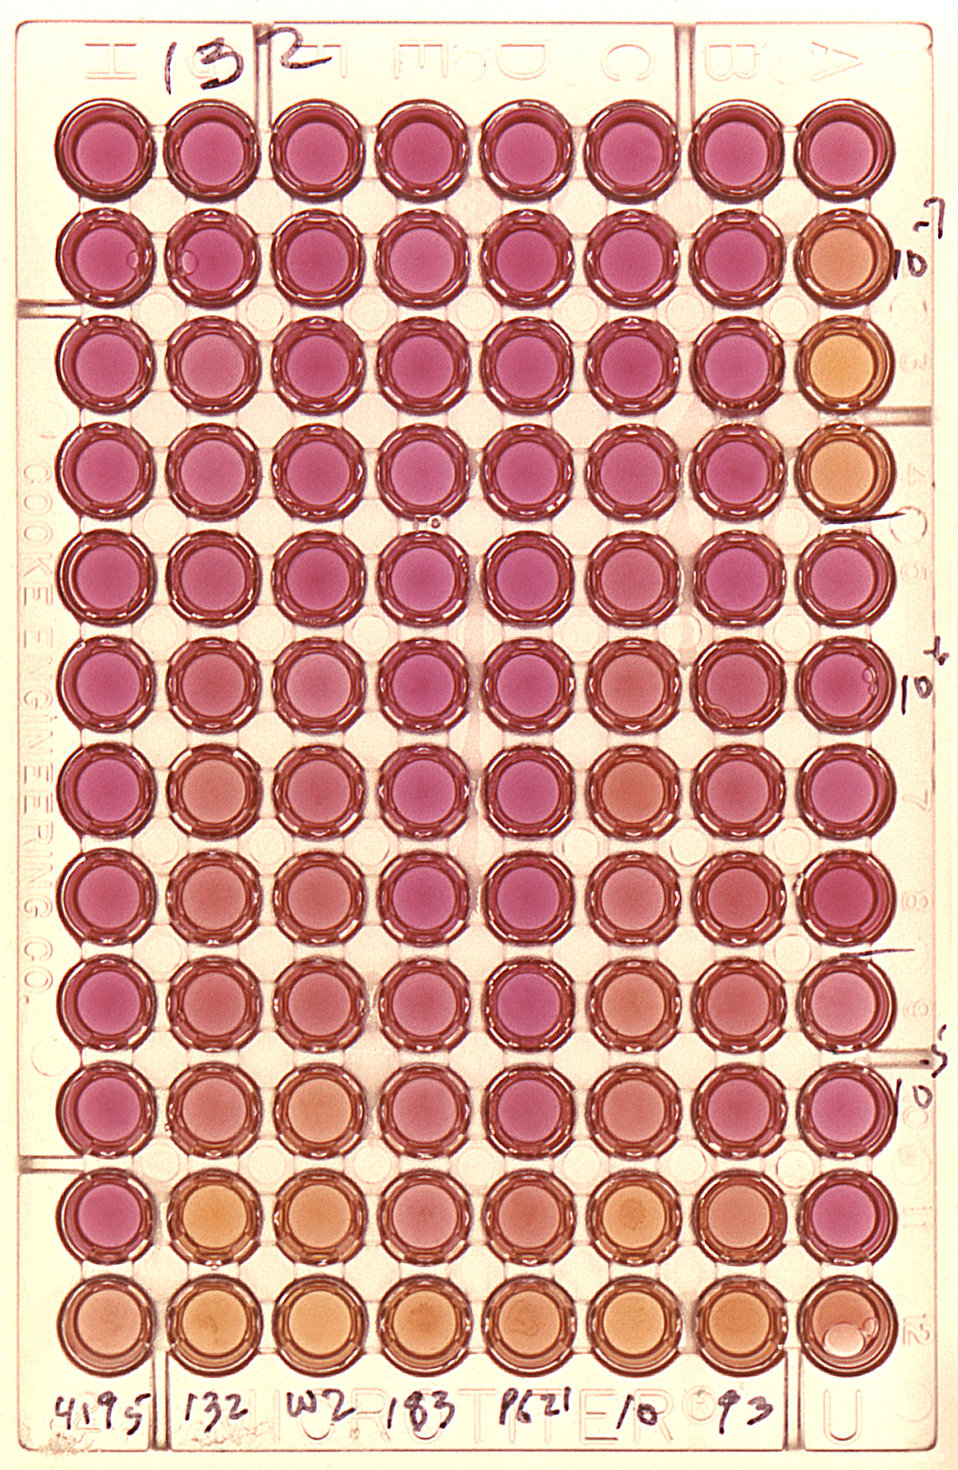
This photograph depicted the results of a metabolic inhibition (MI) test, which compared the relatedness of Mycoplasma hominis, strain 132, to that of other, unidentified strains of M. hominis.